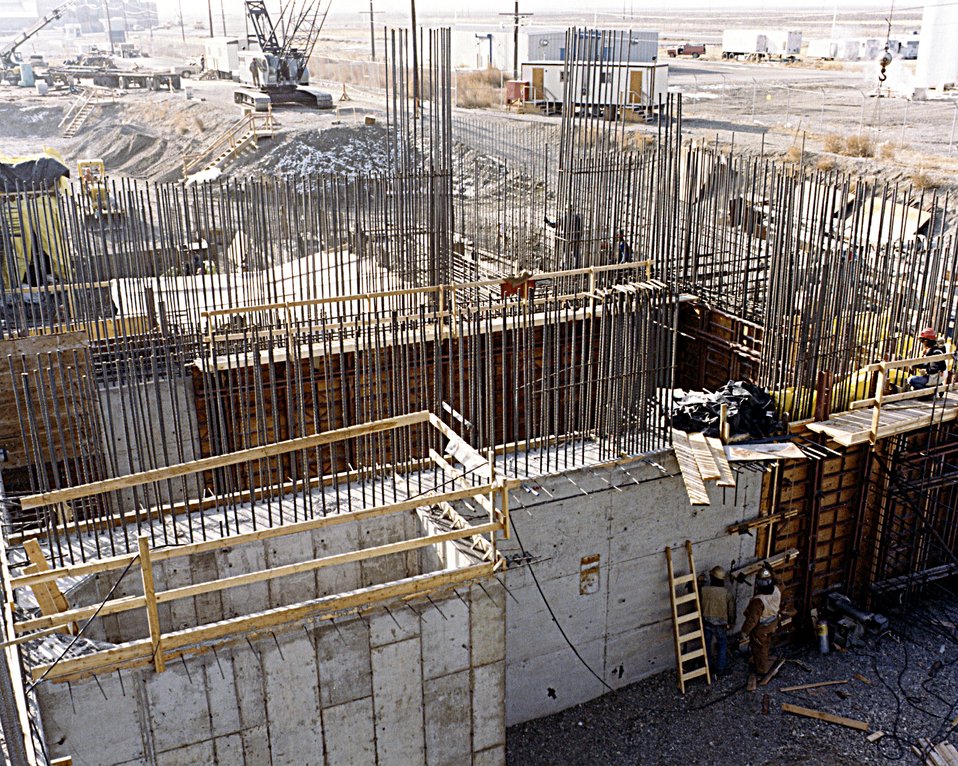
CONSTRUCTION OF THE FLUORINEL AND FUEL STORAGE FACILITY.

THE FLUORINEL FACILITY WILL INCLUDE AREAS FOR THE RECEIPT, HANDLING, STORAGE, AND DISSOLUTION OF SPENT REACTOR FUEL. THE DISSOLVED SOLUTION WILL BE TRANSFERRED TO EXISTING FACILITIES AT THE IDAHO FUEL PROCESSING FACILITY FOR RECOVERY OF CONTAINED URANIUM. THE FACILITY WILL PROCESS A WIDE VARIETY OF SPENT FUELS, INCLUDING NAVAL, TEST, AND RESEARCH REACTOR FUELS, TO INCREASE THE AMOUNT OF URANIUM RESOURCE AVAILABLE TO THE UNITED STATES.